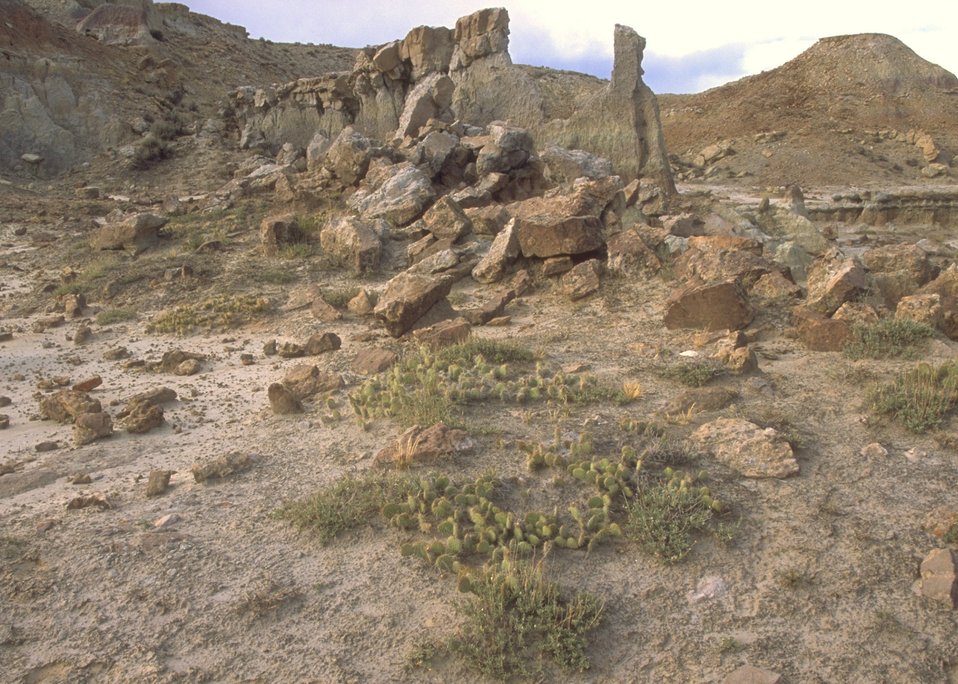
Gooseberry Interpretive Area, Worland Field Office.